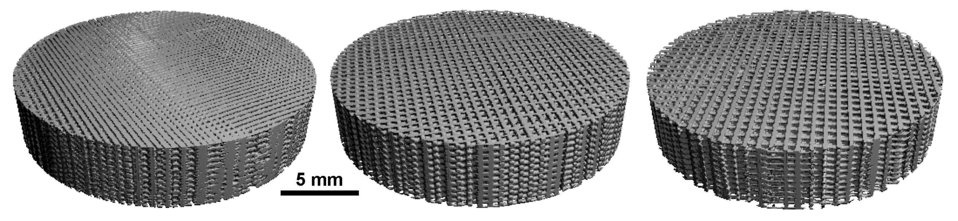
Tissue Engineering